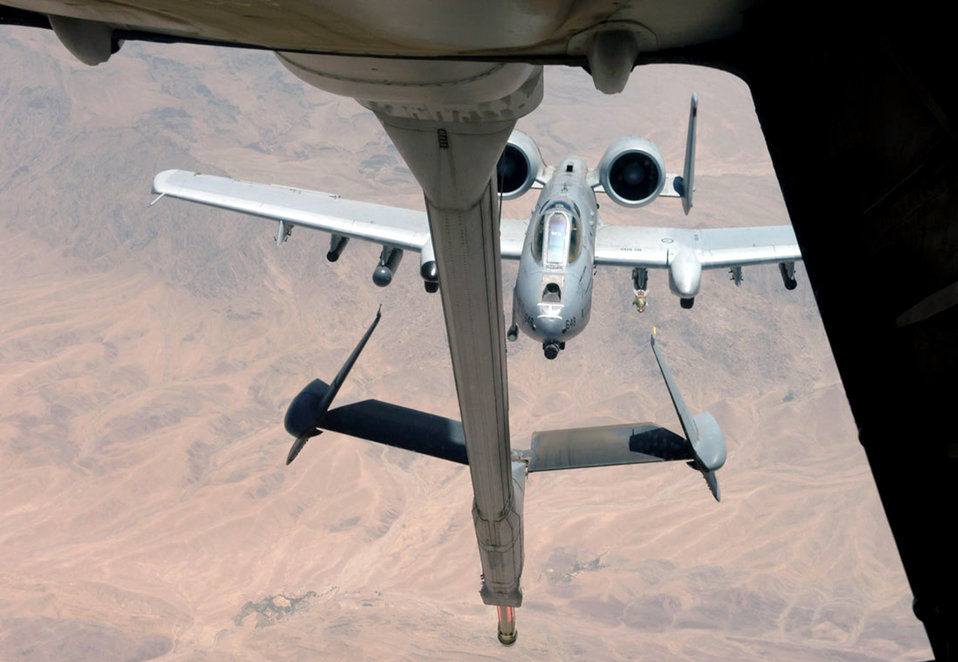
Airpower summary for Aug. 2, 2007

An A-10 Thunderbolt II prepares to make contact with a KC-10 Extender assigned to the 908th Expeditionary Air Refueling Squadron during an Operation Enduring Freedom mission July 25. A-10s provide close-air support for both OEF and Operation Iraqi Freedom. KC-10s also offload fuel to coalition aircraft around the area of responsibility. Tankers offloaded two million pounds of fuel Aug. 2 to more than 175 aircraft.